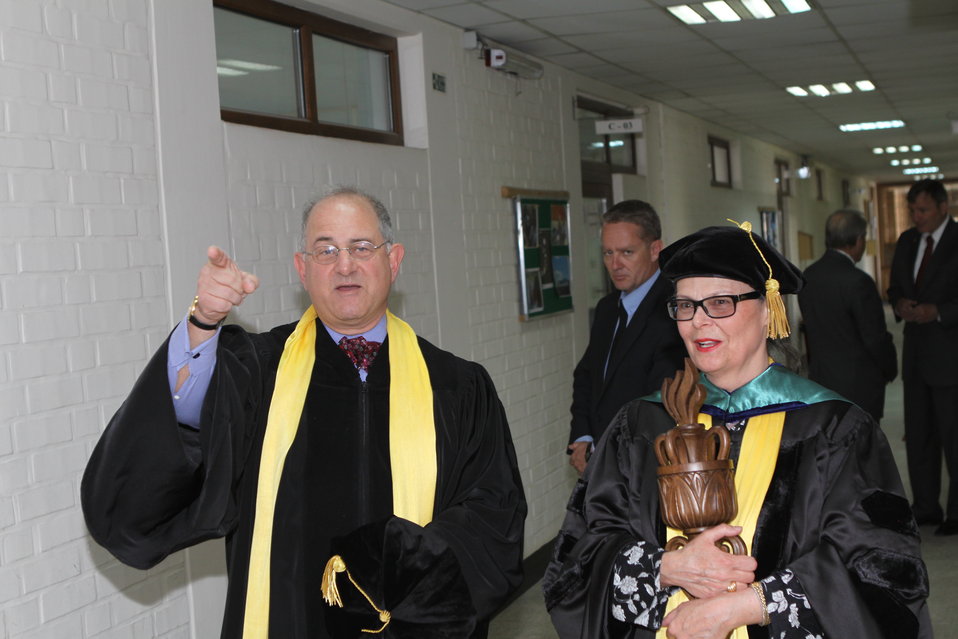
100526 AUAF Graduation 037